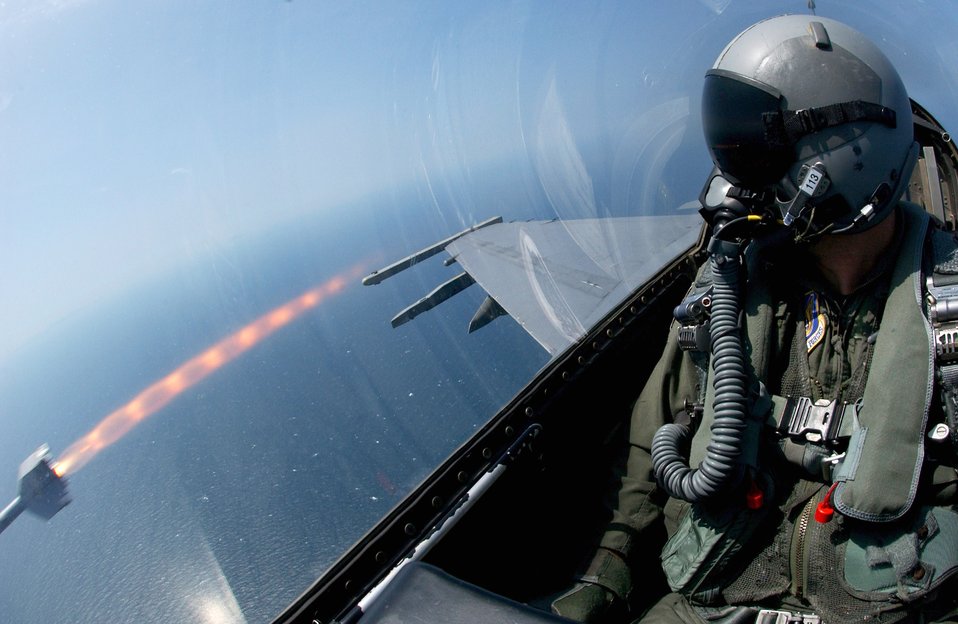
Live fire

An F-16 Fighting Falcon fires an AIM-9 missile off the coast of South Korea during a live-fire exercise Aug. 18. The F-16 is assigned to the 80th Fighter Squadron at Kunsan Air Base, South Korea.